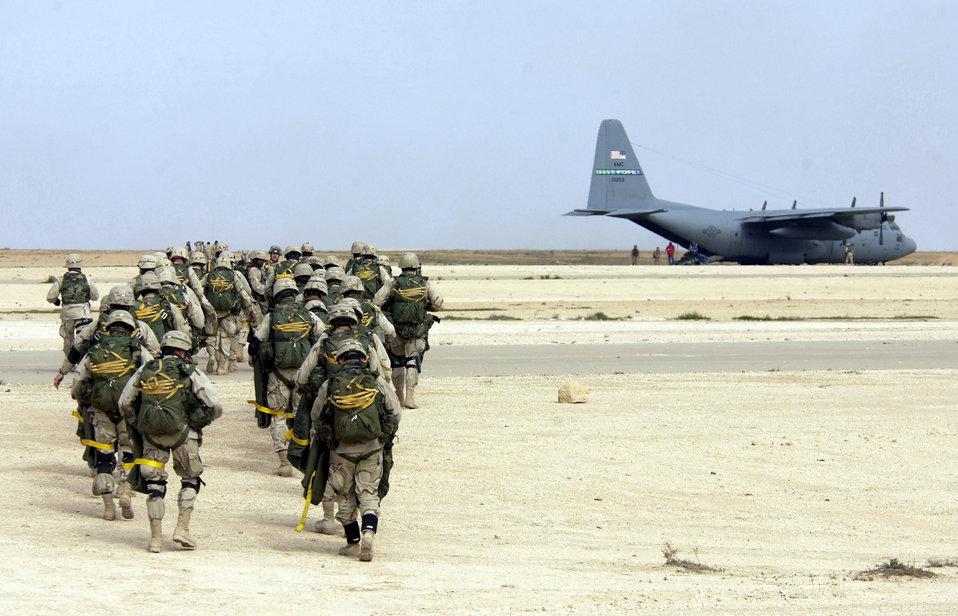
Operation All-American Lightning

SOUTHWEST ASIA -- Soldiers from the 82nd Airborne Division head toward a C-130 Hercules as part of Operation All-American Lightning on Feb. 24. A total of 240 soldiers conducted airdrop training during a capabilities and show-of-force exercise. Before the start of the parachute jumps, A-10 Thunderbolt IIs conducted missile and strafing runs, and F-16 Fighting Falcons dropped 12 bombs on a simulated target near the airfield as part of the exercise.